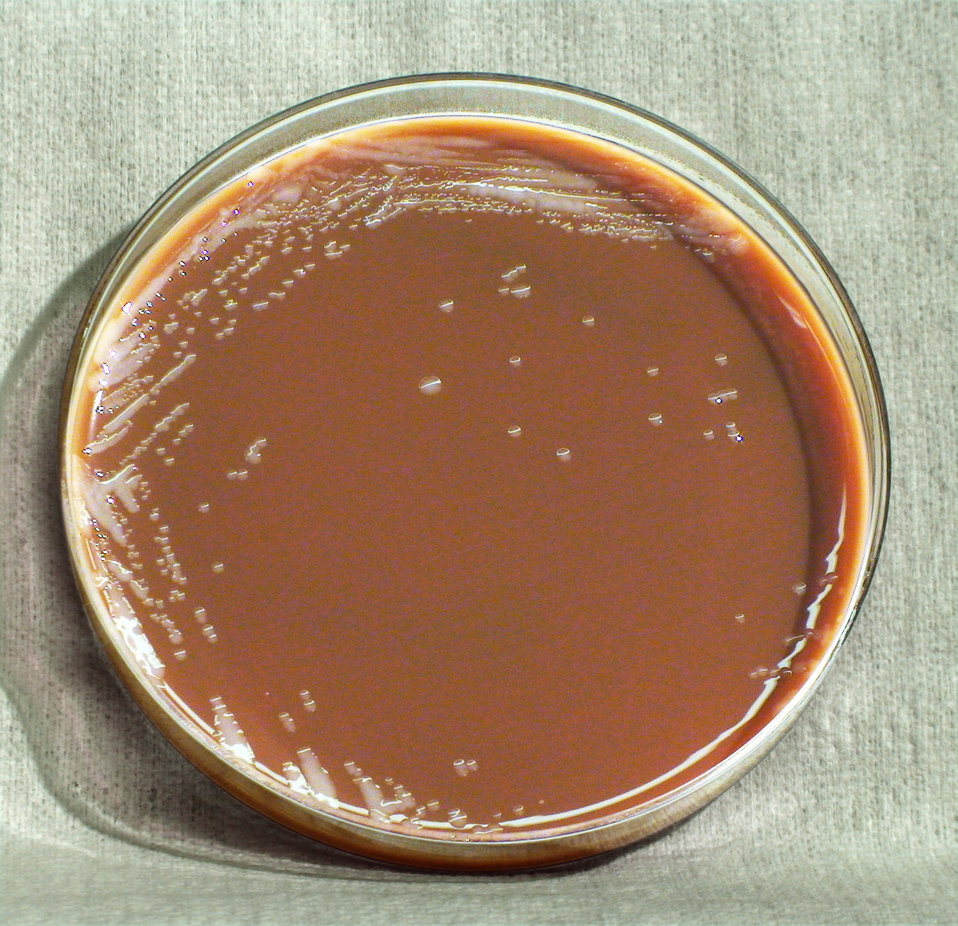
This photograph depicts the colonial morphology displayed by Gram-negative Francisella tularensis bacteria, which was grown on a medium of chocolate agar, for a 72 hour time period, at a temperature of 37�C. See PHIL 12441, for a closer view of these bacterial colonies. Take a look at PHIL 12437 and 12438 depicting the appearance of F. tularensis colonies grown on the same medium, and at the same temperature, but for one-third the time (24hr). Also see both PHIL 12438 and 12439, for the appearance of bacterial colonies, again, grown on the same medium, and at the same temperature, but for a lesser time period (48hr).